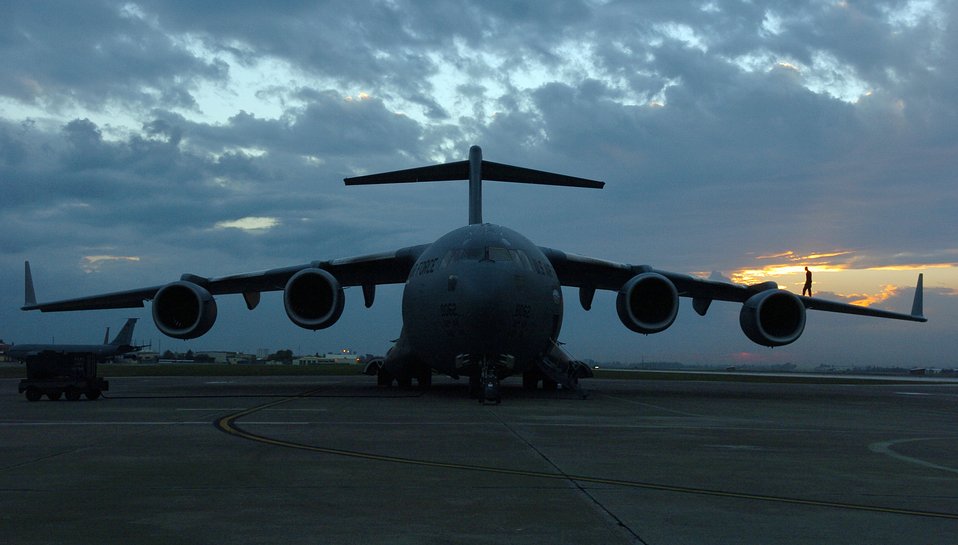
Active flightline

Staff Sgt. Daryl Washington performs a dropped object prevention inspection on a C-17 Globemaster III at Incirlik Air Base, Turkey, Nov. 15. More than half of all air cargo delivered to support Operation Iraqi Freedom is processed through here. Due to the close proximity of Incirlik to Iraq and the ability to land at more and smaller runways, flights from here have kept at least 3,300 convoy trucks and 9,000 servicemembers from harm's way. Sergeant Washington is a crewchief with the 728th Air Mobility Squadron.